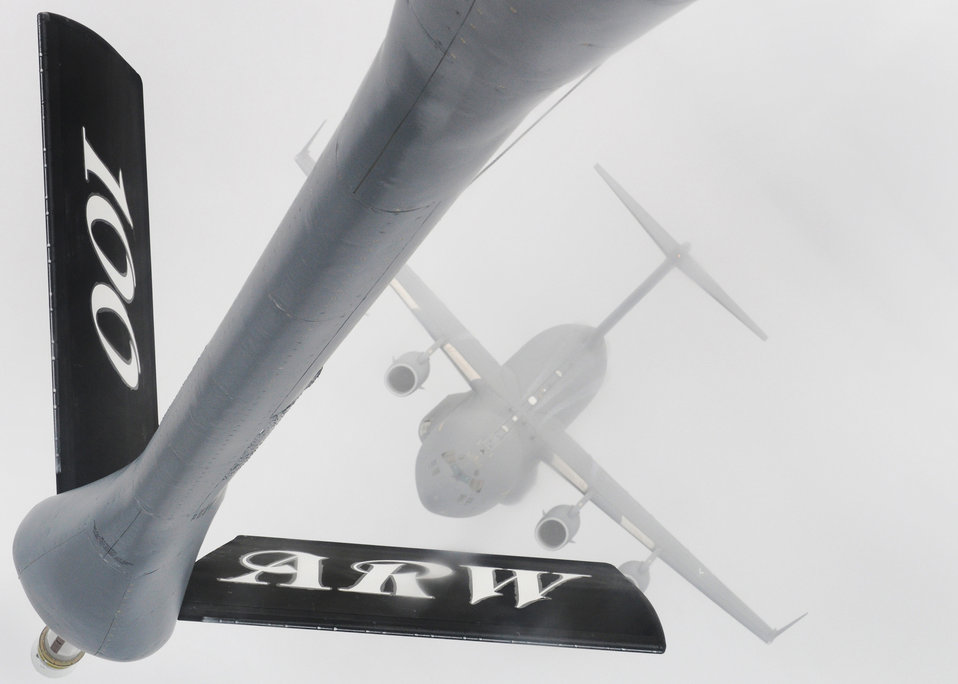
Boom!

A 100th Air Refueling Wing KC-135 Stratotanker extends its boom to receive and refuel a C-17 Globemaster III Nov. 12, 2011, over Germany.